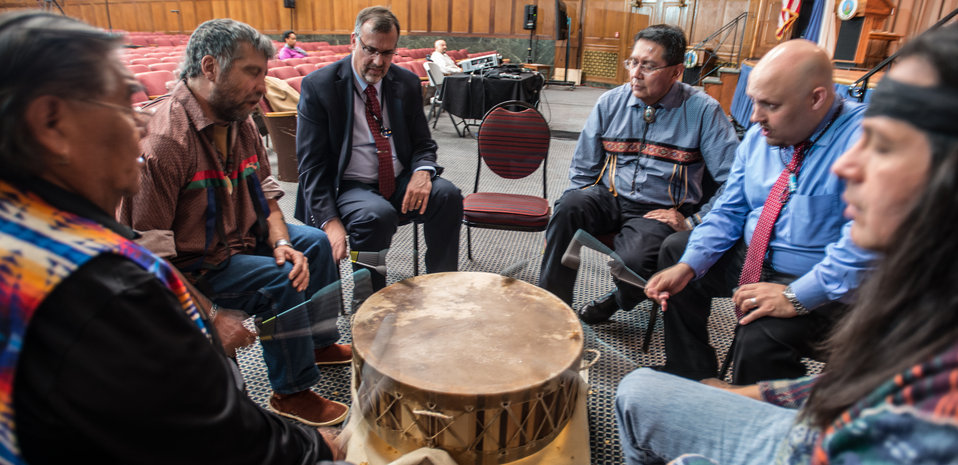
The U.S. Department of Agriculture (USDA), Natural Resources Conservation Service (NRCS), American Indian/Alaska Native Employee Association (AIANEA), American Indian Drum Group singer/drummers move in rhythm to the song and powwow drum beat. (L to R) Tribal Elder Norman Lopez (Ute Mountain Ute Tribe); Wellsboro, Colorado District Conservationist, AIANEA member Ciro Lopinto (Hopi); National Design Engineer and AIANEA 1st Vice President Steve Durgin ,Conservation Engineering Director Noller Herbert (Navajo), Office of Tribal Relations (OTR), Tribal Relations Manager John Lowery (Lummi),and Trinidad, Colorado District Conservationist and AIANEA Drum Keeper Levi Montoya practice before the 2013 American Indian and Alaska Native Heritage Observance at the U.S. Department of Agriculture (USDA) on Thursday, Nov. 14, 2013 in Washington, D.C.